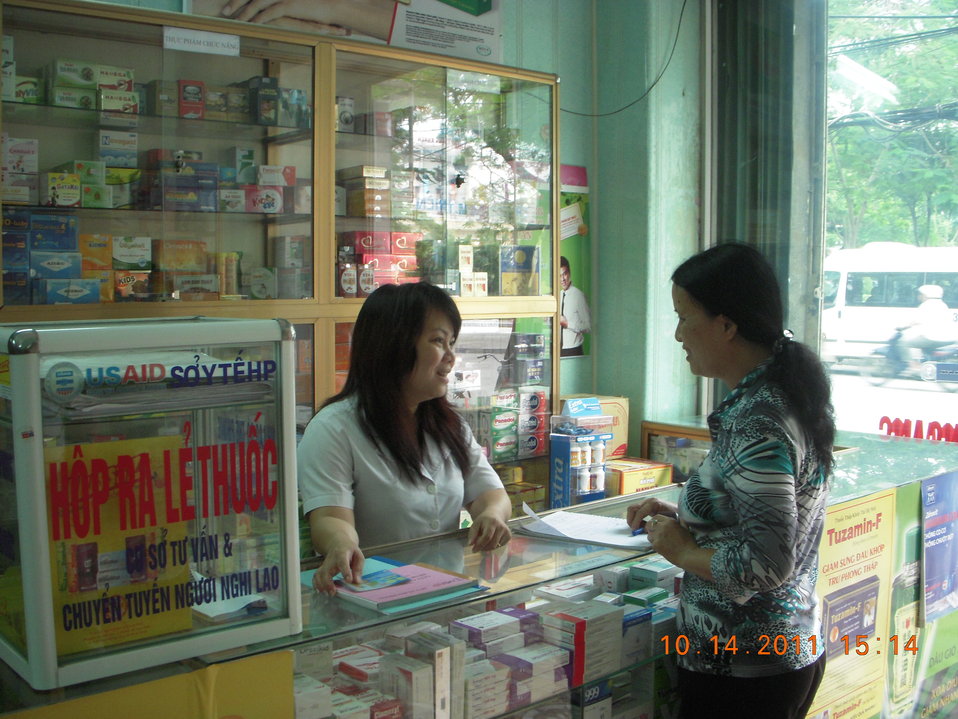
USAID project participant, pharmacist Tran Thi Huong in Hai Phong